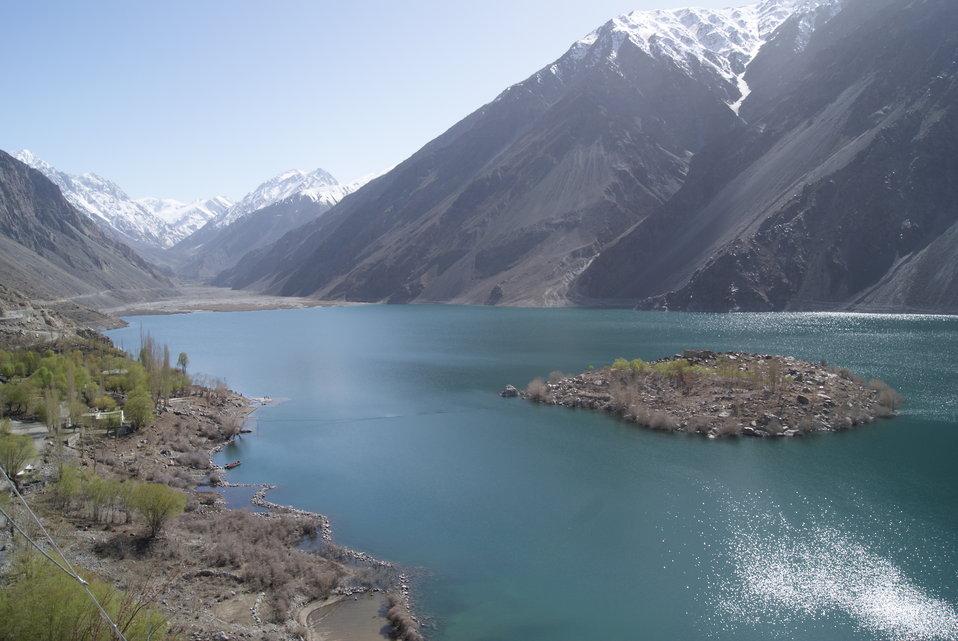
Satpara